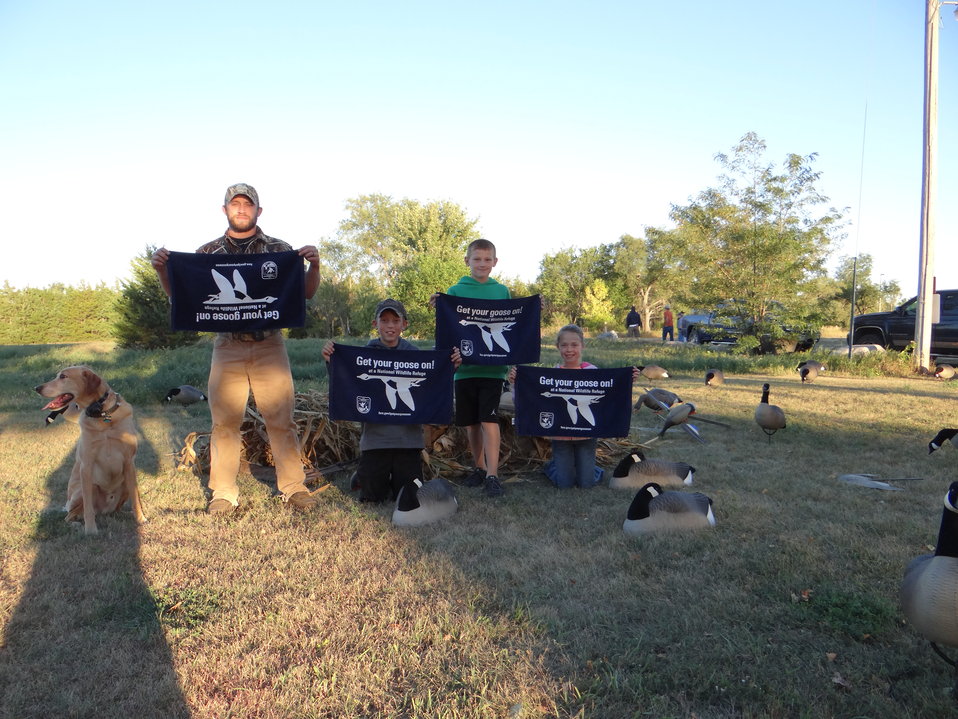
Get Your Goose On!

2013 Huron WMD Youth Waterfowl Hunt. 'Get your Goose On!' Decoy spread and hunting dog demonstration before the hunt.The Huron Wetland Management District hosted its 10th annual Youth Waterfowl Hunt last September. This event provided 28 youth hunters between the ages of 12 – 15 and (new) mentored hunters (10-11), an opportunity to learn about various migratory birds and their habitats, duck and goose calling, decoys, and waterfowl hunting techniques. This event continues to be a success each year due to the dedicated volunteers within the community of Huron.